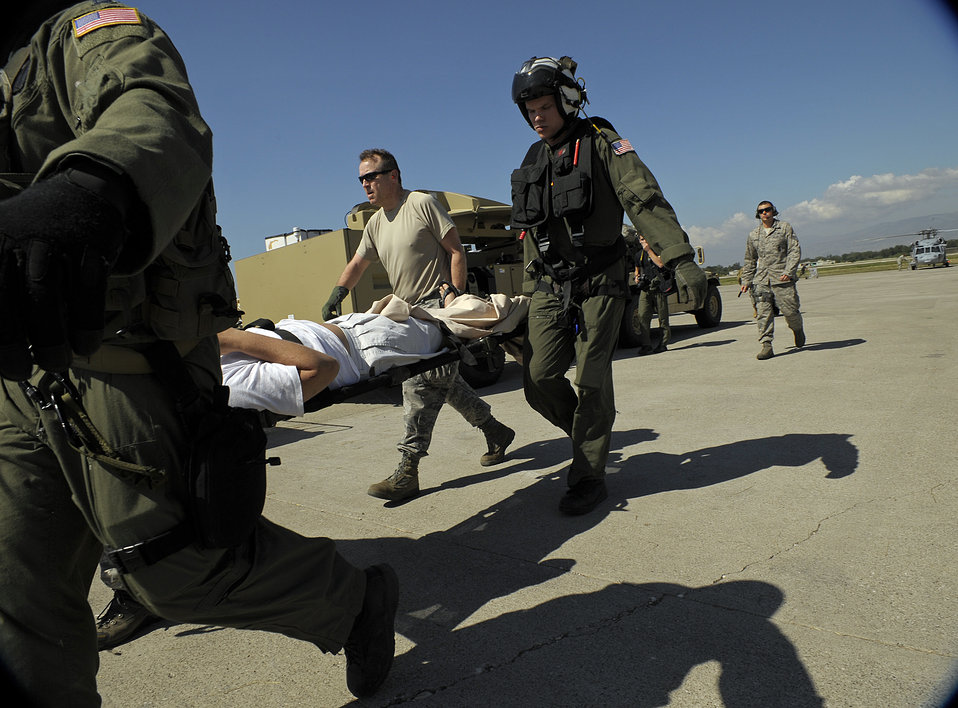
Haiti Earthquake Relief

Airmen from the Air Force Special Operations Command at Hurlburt Field, Fla., offload injured people in Port-au-Prince, Haiti, Jan. 15, 2010.